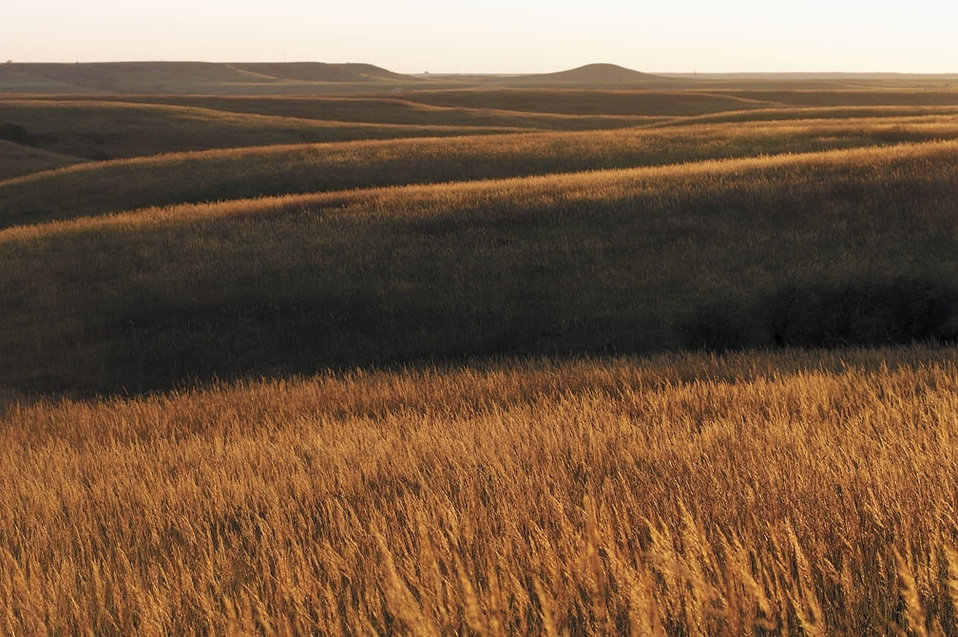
golden konza tallgrass prairie

Flint Hills National Wildlife Refuge, KS